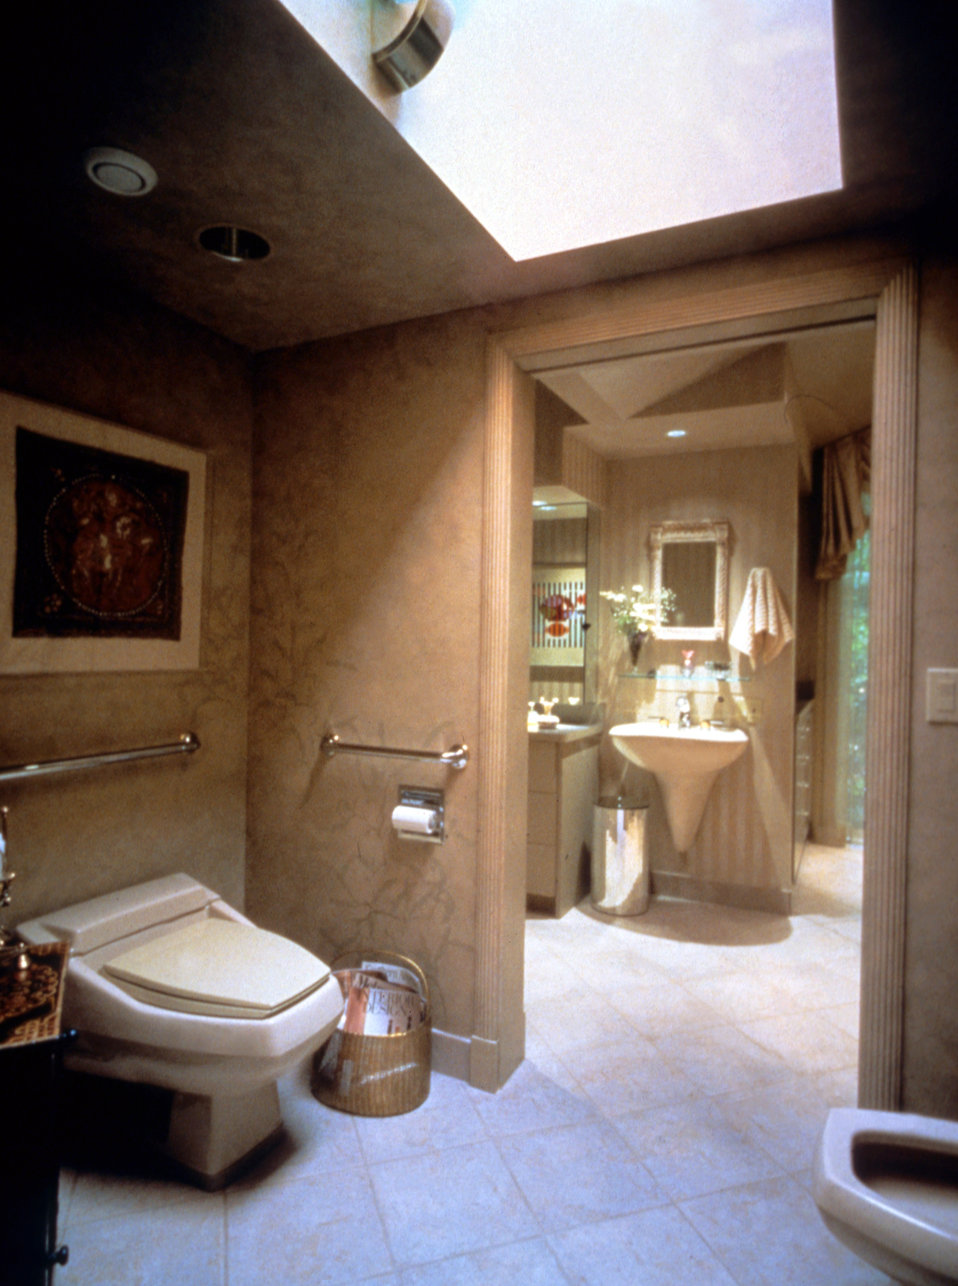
This was one of three images (PHIL# 9198 - 9200), depicting a modern high-end bathroom design, which took into account the needs of the mobility-impaired, thereby, making an overall more accommodating facility for all who might make use of this bathroom. Included was plenty of maneuvering room around the toilet and bidet, while the wall hung sink provided ample knee space for those who might be seated in a wheelchair. This design also showed that the inclusion of such accommodating features need not detract from the design's aesthetic appeal.